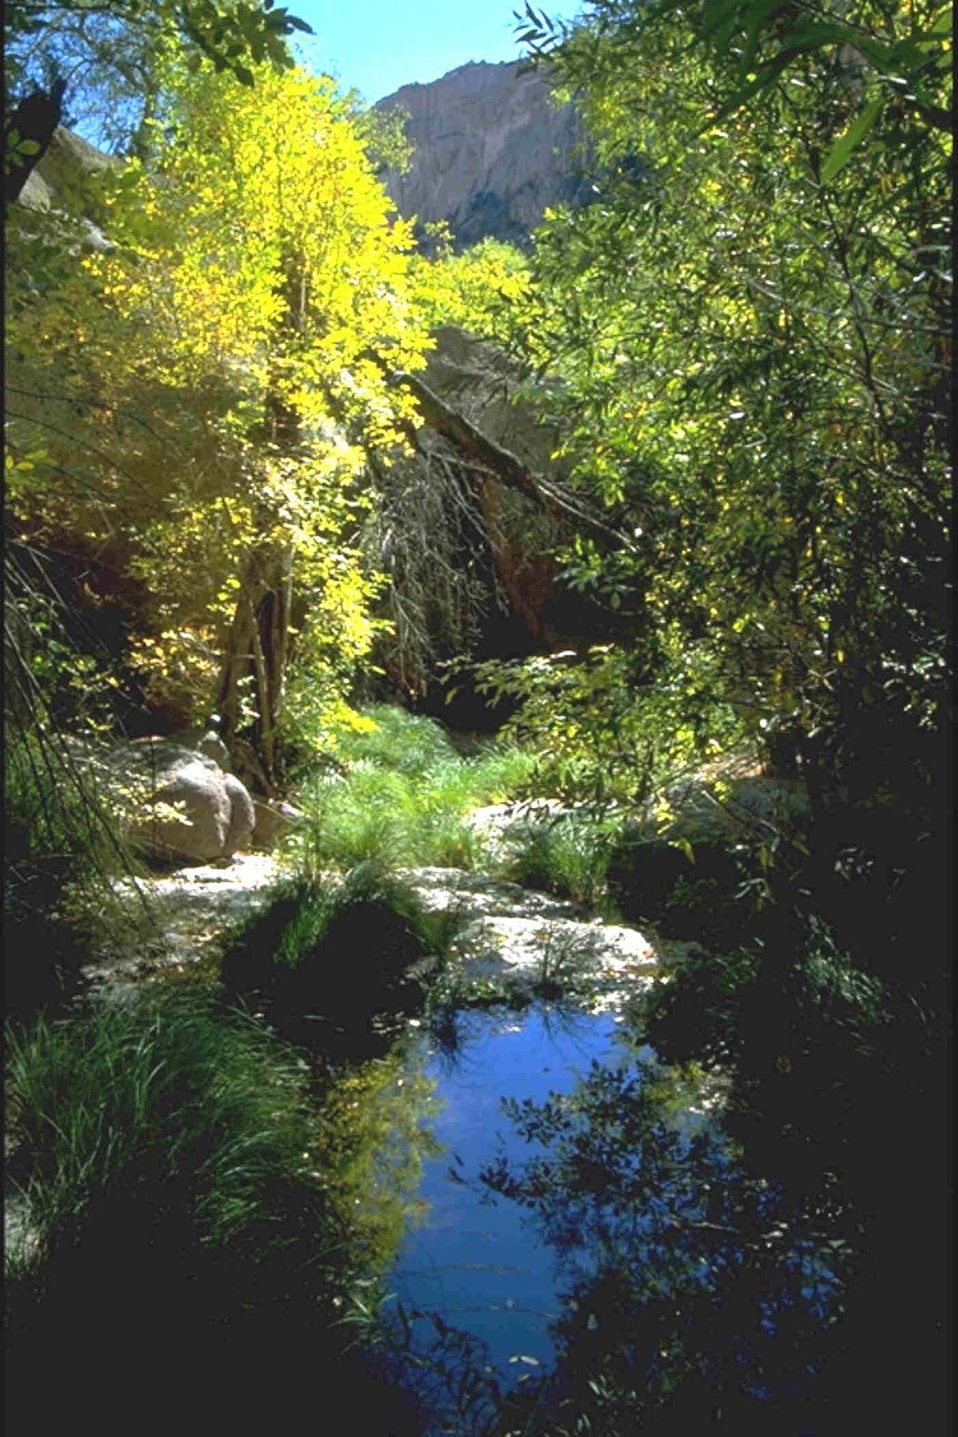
Just inside the mouth of Booger Canyon.